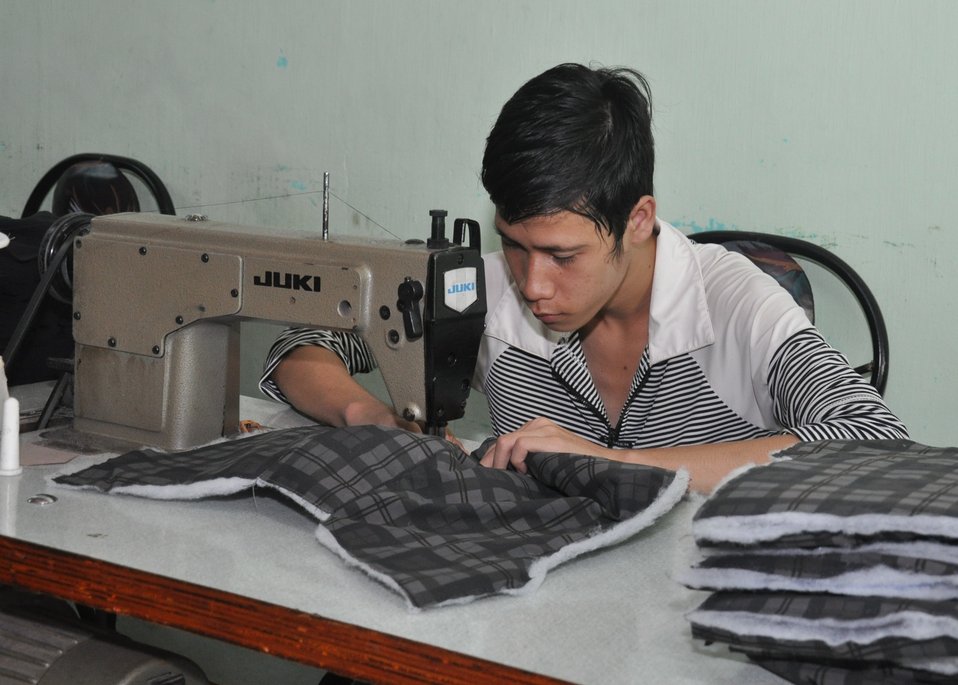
USAID supports training on livelihood skills for persons with disabilities in Danang.

Danang, June 10, 2013.